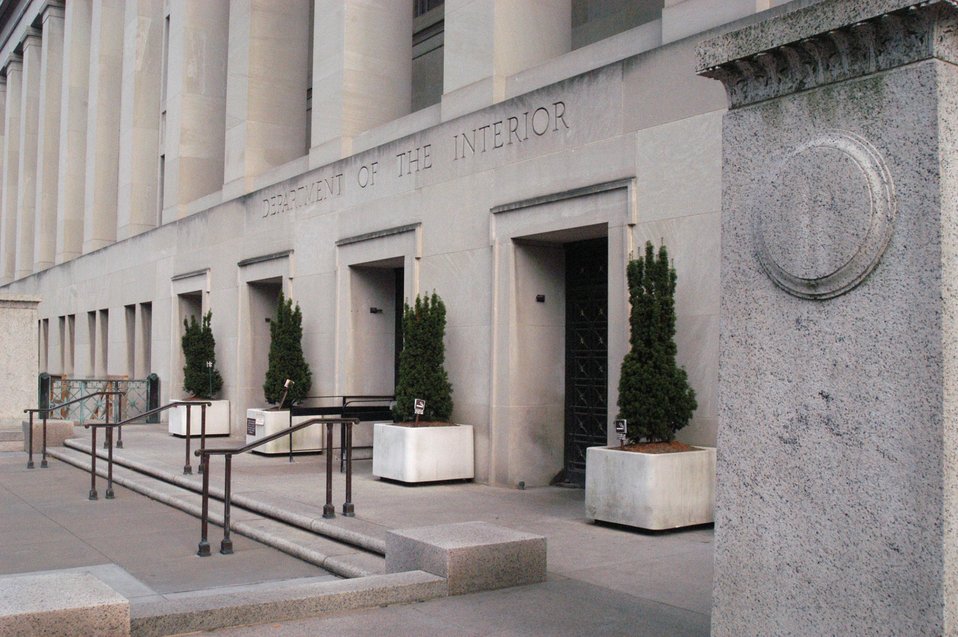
Department of the Interior building in Washington DC on 1849 C Street N.W. Photo by Tom Iraci, July 2004.